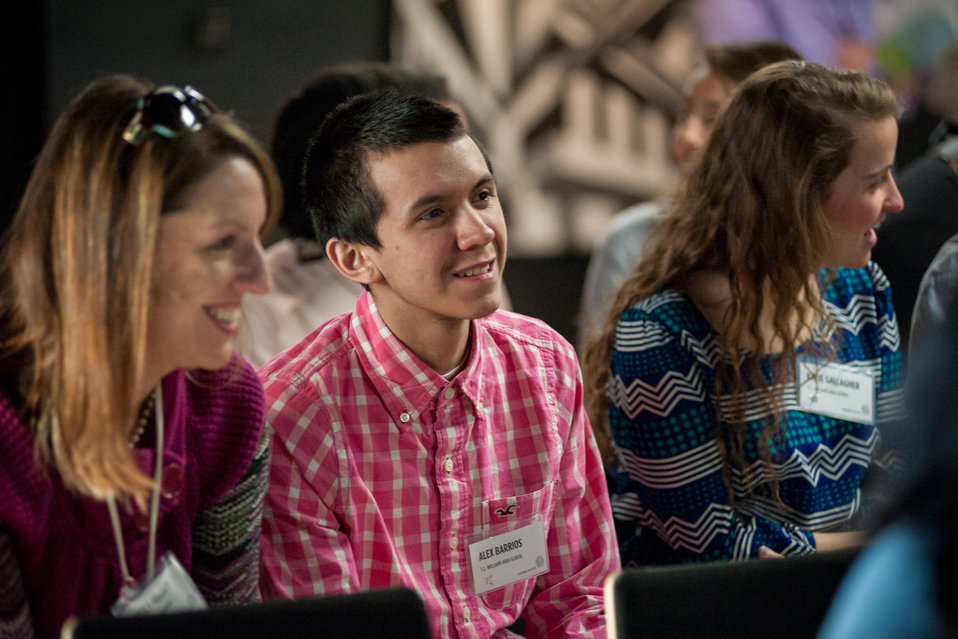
Mentor NDFW Event 2014

Mentor Foundation USA, in partnership with the National Institute on Drug Abuse (NIDA) and other key partners hosted a Youth Drug Facts Rally at the House of Sweden on Thursday, 30th January 2014. Approximately 200 students from five local high schools attended and had the opportunity to interact with top U.S. scientific experts, and inspiring guest speakers to “shatter the myths” about drugs and substance abuse, while pledging to stay drug-free.